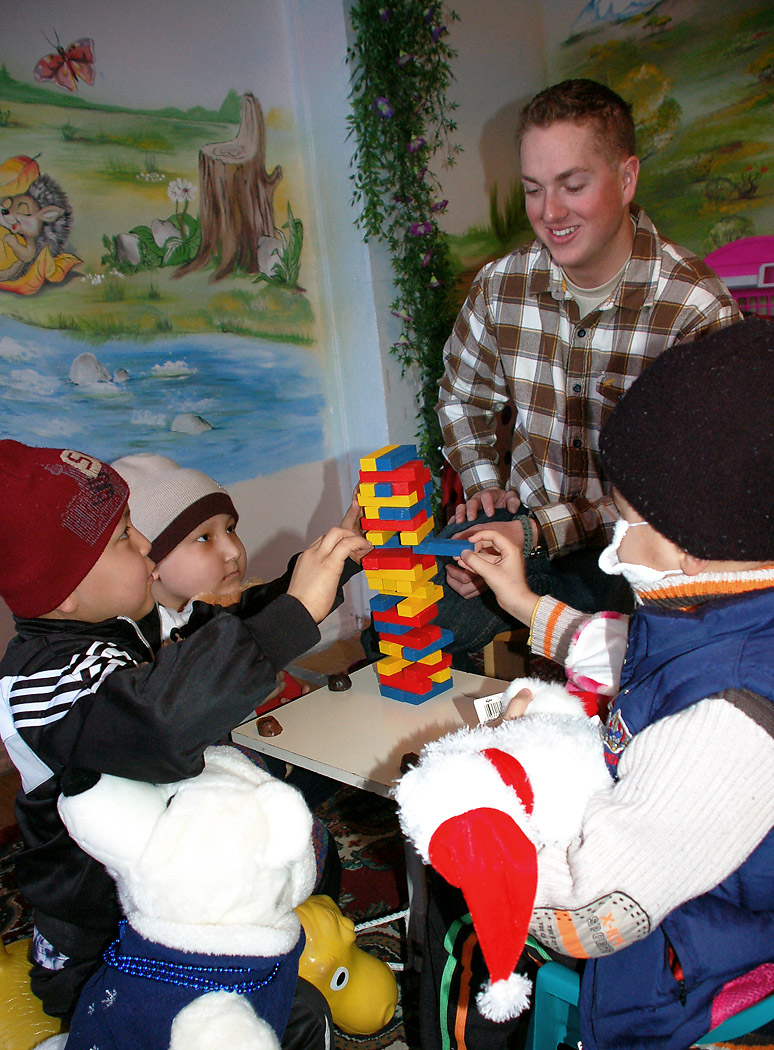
Manas Airmen tend to children's cancer center needs

Airman 1st Class Adam McDonough plays a game of tumbling towers with Kyrgyz children who are recovering cancer patients Feb. 25 at Kygrystan's only Children's Cancer Hospital. Airman McDonough spent some of his off-duty time with others from Manas Air Base, Kyrgyzstan, who are members of the Manas Air Base Outreach Society, a private, nonprofit volunteer service organization that works to support a number of causes in the greater Bishkek area and communities near the base. Airman McDonough is assigned to the 376th Expeditionary Civil Engineer Squadron. He is deployed from Seymour Johnson Air Force Base, N.C., and is originally from Lake Elsinore, Calif.